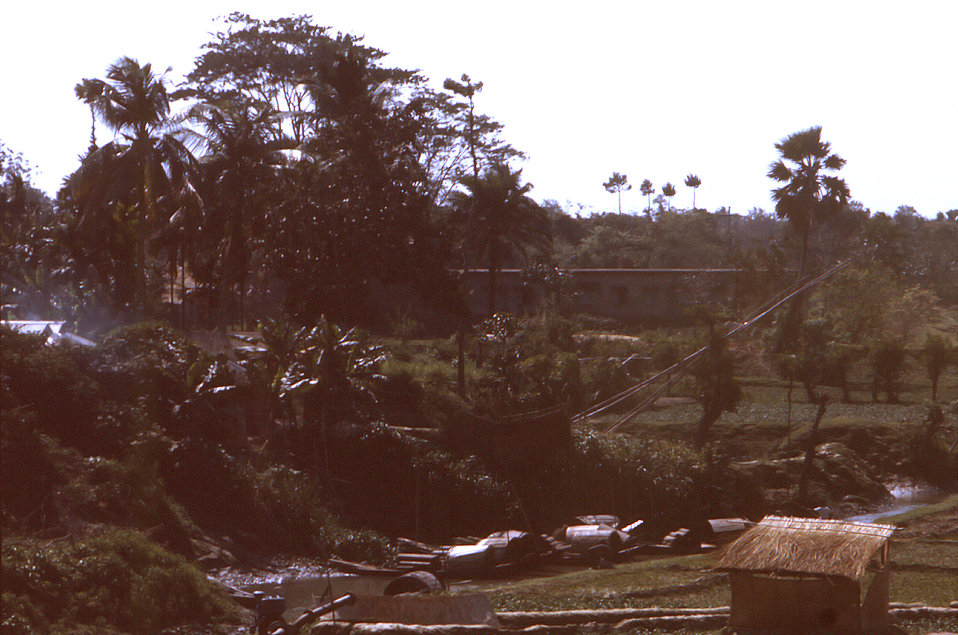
Photographed sometime in the early 1970s, during the worldwide smallpox eradication campaign, this image depicted a view of the char (island) sub-district of Romari, located in northeast Bangladesh.The Disease